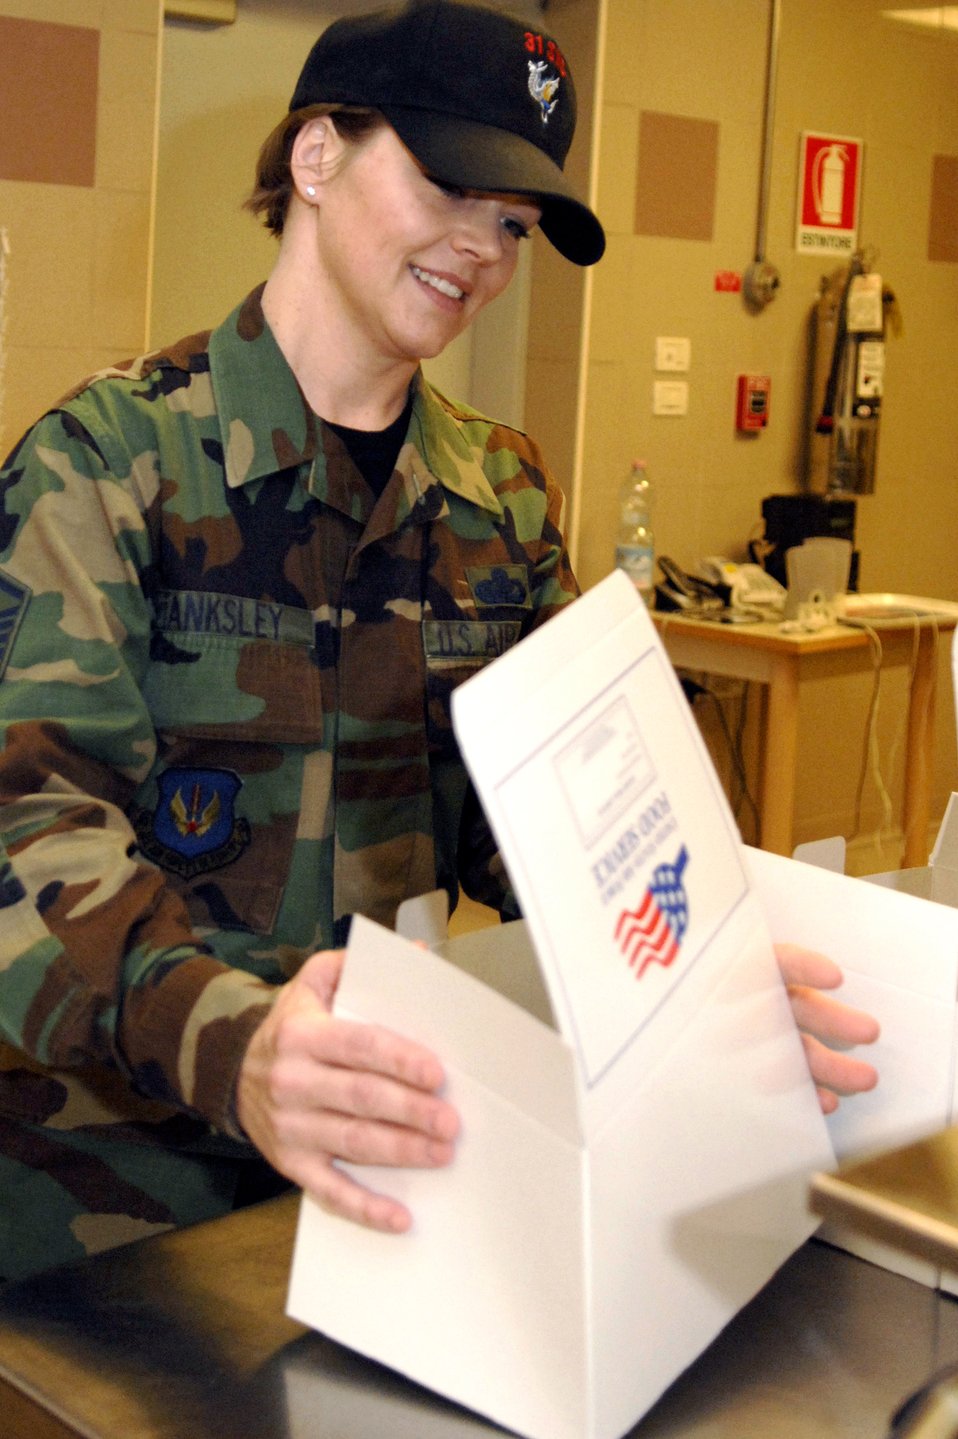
Serving Airmen

Master Sgt. Gina Tanksley prepares boxed meals at the La Dolce Vita Dining Facility Jan. 19 at Aviano Air Base, Italy. Base members at Aviano AB maintain two F-16 fighter squadrons to conduct regional and expeditionary operations under NATO, Supreme Allied Command Europe, or national tasking.